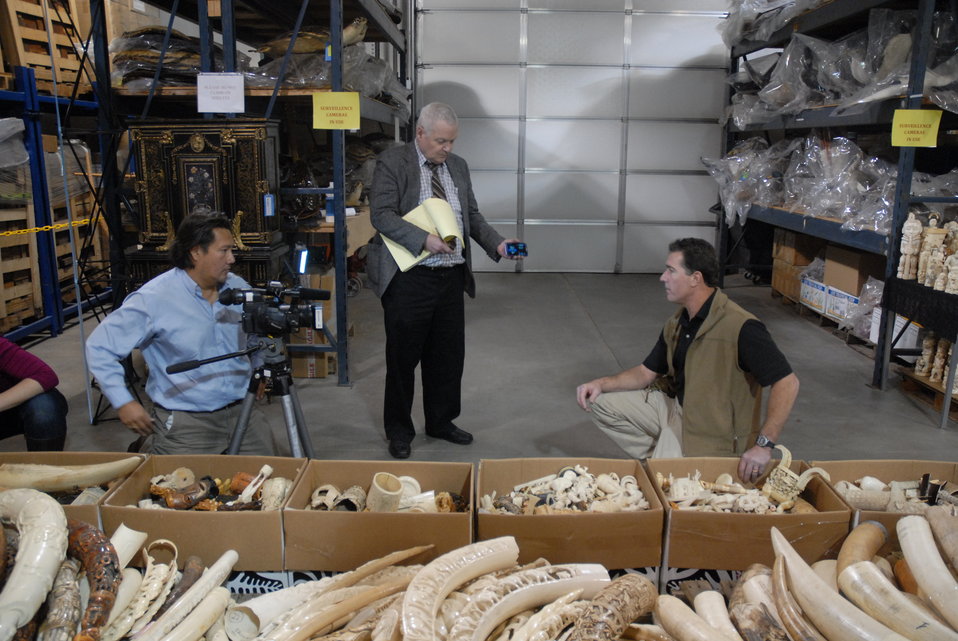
Ivory stockpile slated for destruction in the crush.